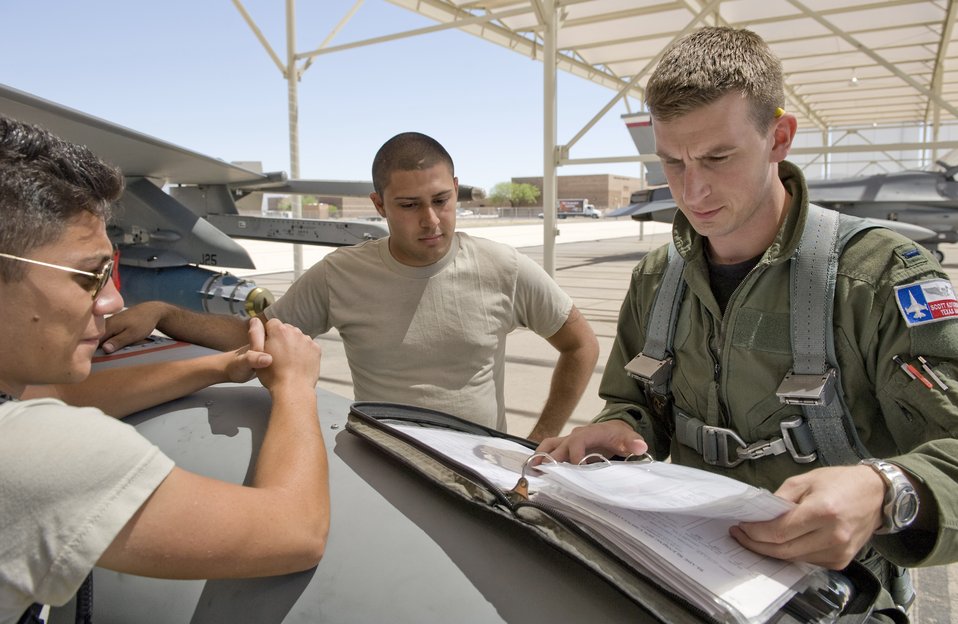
Airmen train next generation

1st Lt. Scott Kotowski (right) reviews aircraft maintenance records with crew chiefs Senior Airman Jacob Rocha (middle) and Senior Airman Chris Wilson prior to flying a training sortie April 23 at Davis-Monthan Air Force Base, Ariz. All three Airmen are assigned to the 149th Fighter Wing in San Antonio, and are participating in Exercise Coronet Cactus. Lieutenant Kotowski is a student pilot.